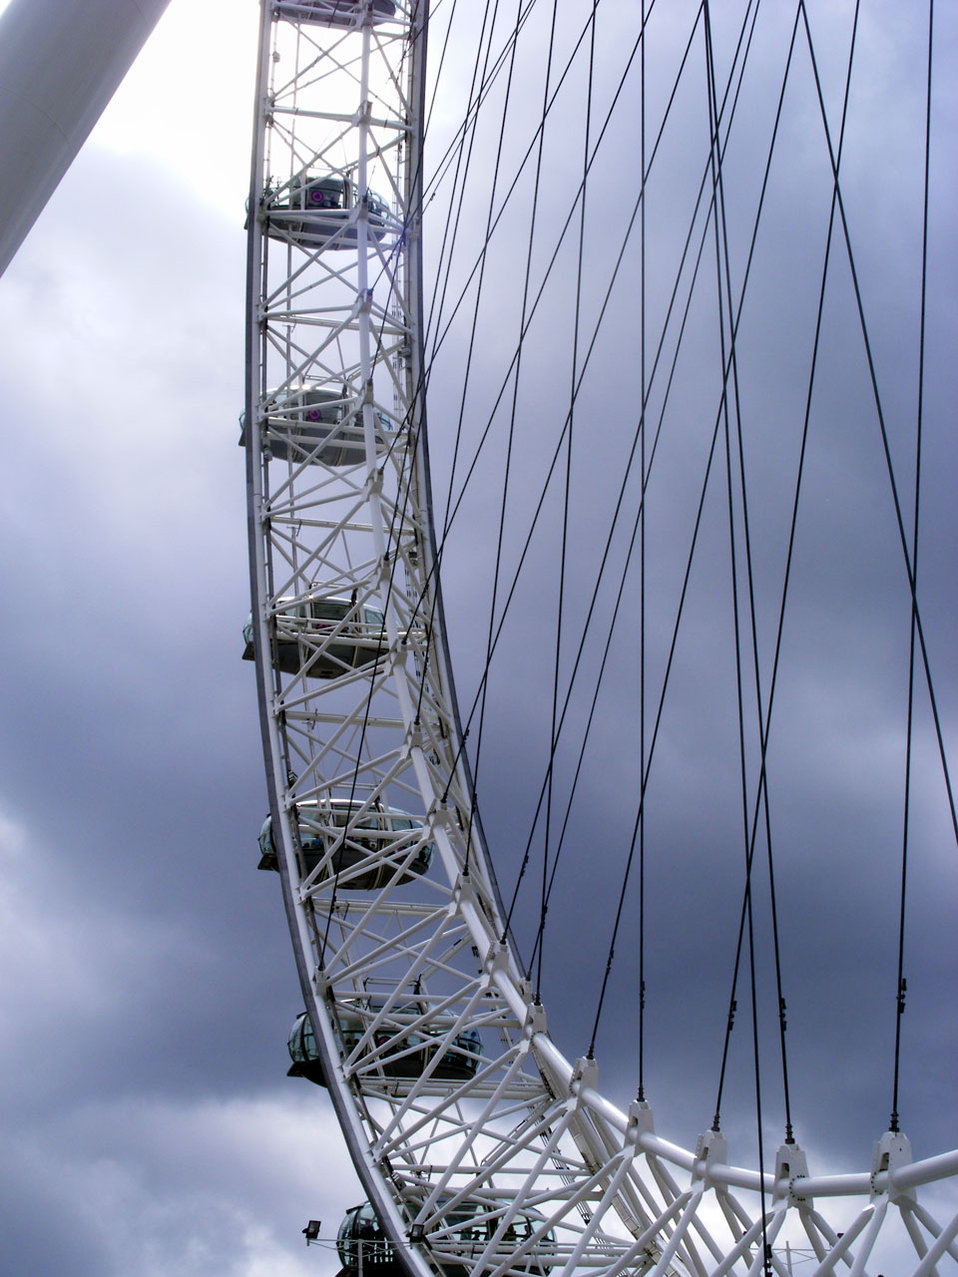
The london eye

A section of the london eye.